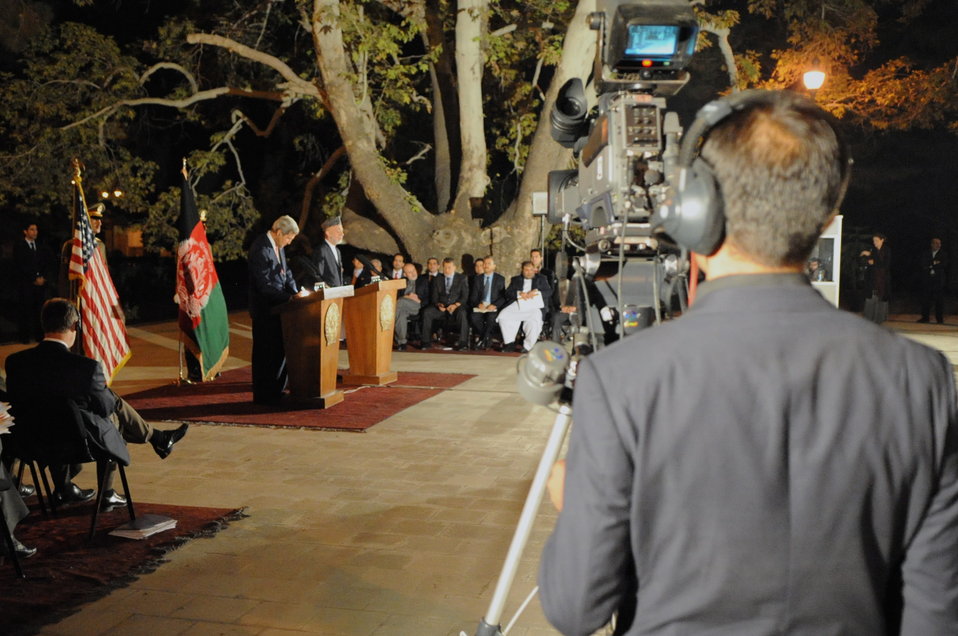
Secretary Kerry, Afghan President Karzai Discuss Bilateral Security Agreement

U.S. Secretary of State John Kerry and President Hamid Karzai discuss a Bilateral Security Agreement between the U.S. and Afghanistan during an outdoor news conference in Kabul, Afghanistan, on October 12, 2013.